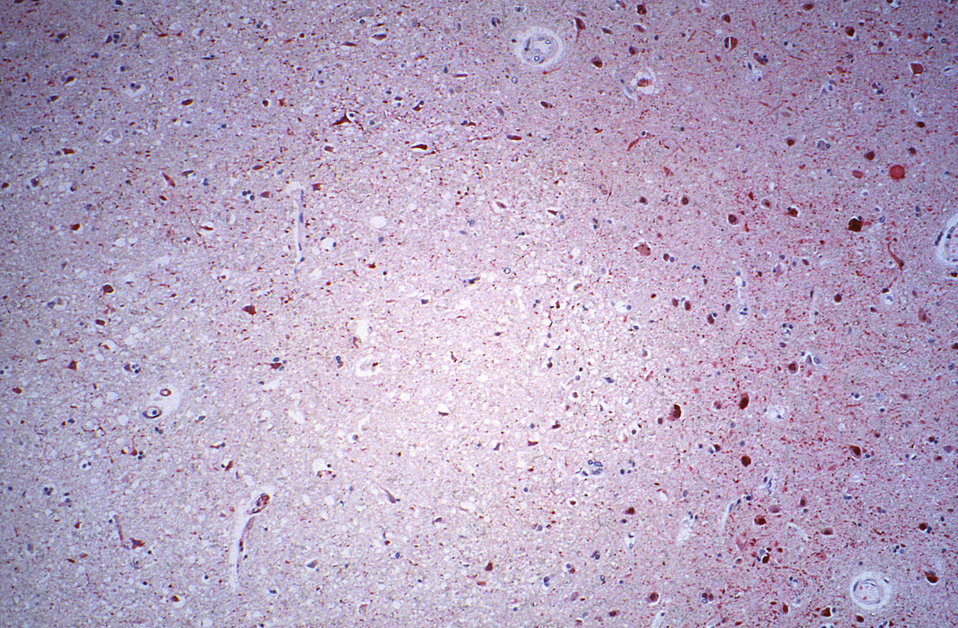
Using immunohistochemical (IHC) technique, this photomicrograph of a central nervous system (CNS) tissue specimen, revealed some of the cytoarchitectural histopathologic changes associated with a Nipah virus infection, in this case affecting a human patient.